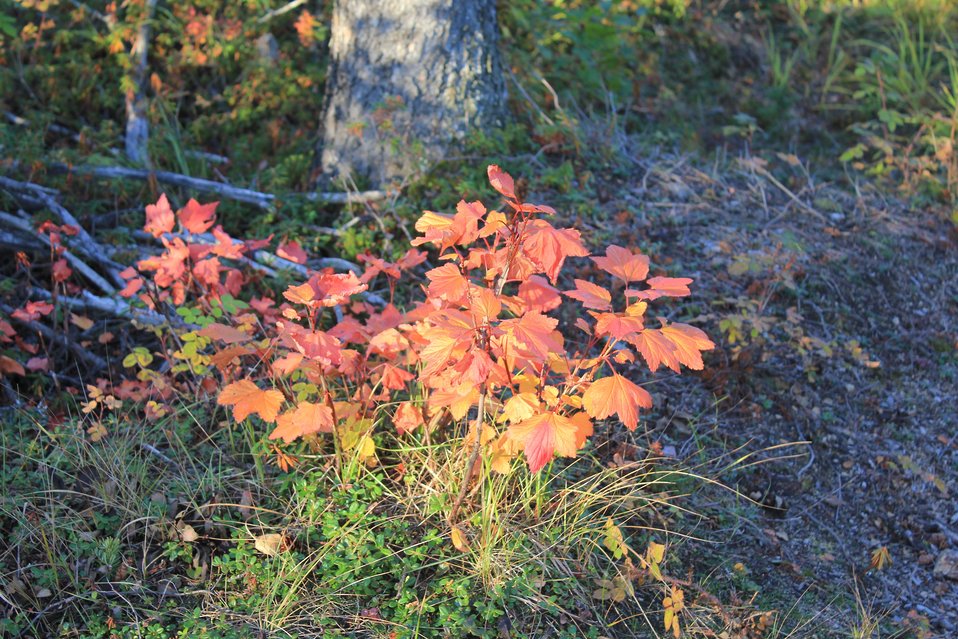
Cloudberry bush in the fall outside Inuvuk.